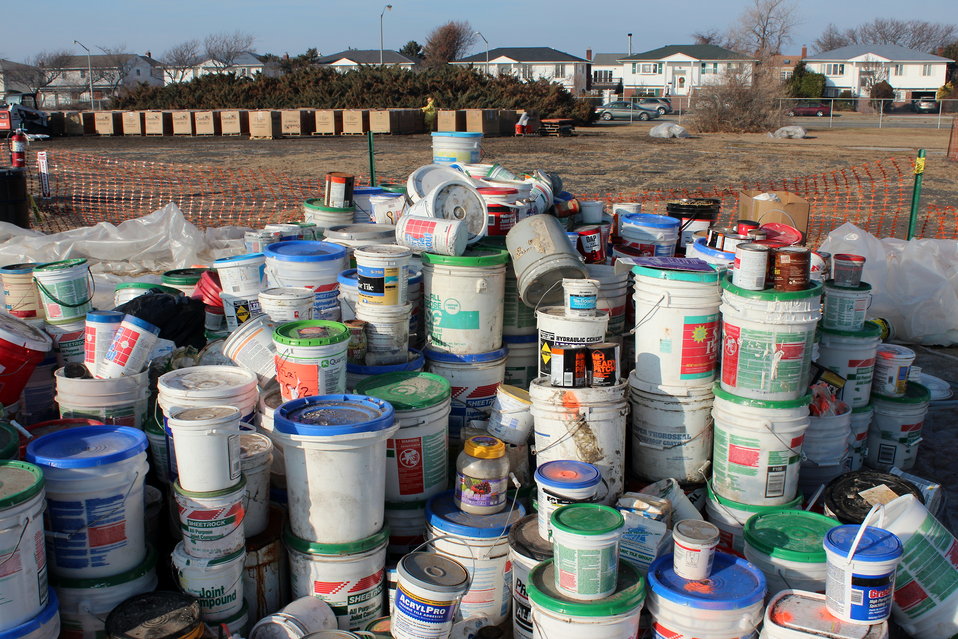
December 3, 2012 – Household Hazardous Waste separated for proper disposal

One of the many piles at the Nickerson Field collection area, Lido Beach, New York.